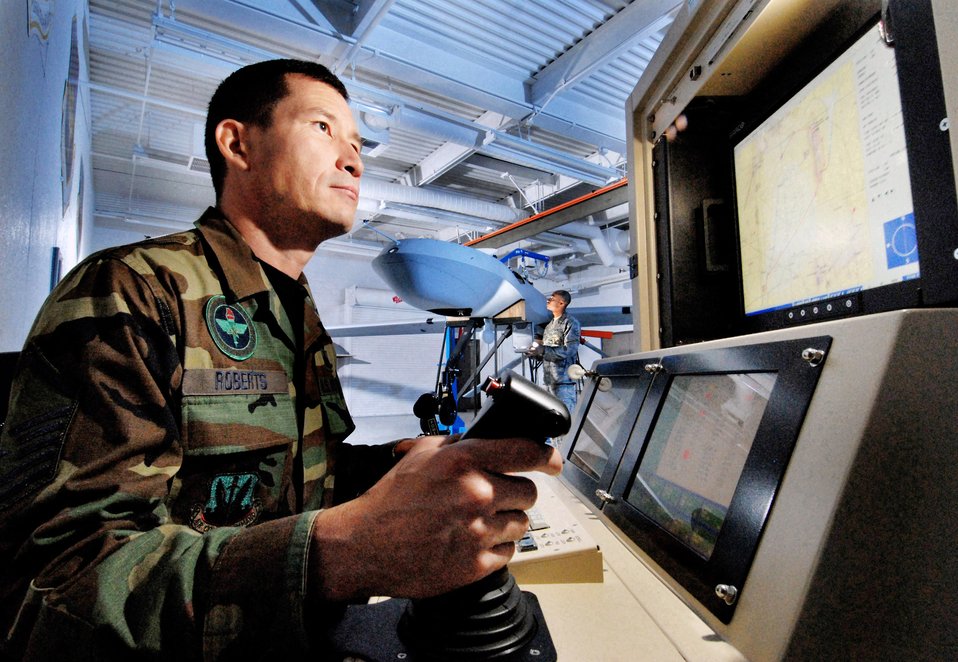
Let's look one more time ...

Master Sgt. Fred Roberts (foreground) and crew chief Staff Sgt. Alex Bush (back) check an MQ-1 Predator unmanned aircraft system Oct. 15 at March Air Reserve Base, Calif. Both are members of the California Air National Guard.